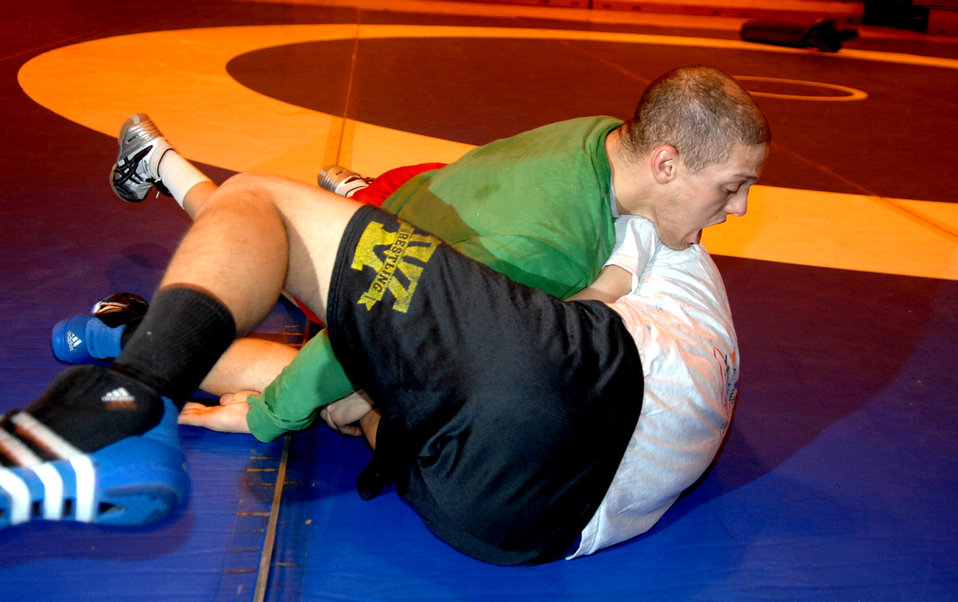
Air Force Wrestling Team selects athletes for 2008 season

Dean Maraj (left) and Thamir Rimbert practice their wrestling moves in preparation for the Armed Forces Championship March 5 at the fitness center on Mountain Home Air Force Base, Idaho. Beginning Feb. 13, almost two dozen potential candidates for the All Air Force Wrestling Team began tryouts for the 2008 wrestling season. After more than 120 candidates sent applications to Richard Estrella, the Air Force wrestling coach for 21 years, he chose the 13 most-talented athletes to join the team. Maraj is stationed at Royal Air Force Croughton, England, and Rimbert is from the 366th Component Maintenance Squadron at Mountain Home AFB.